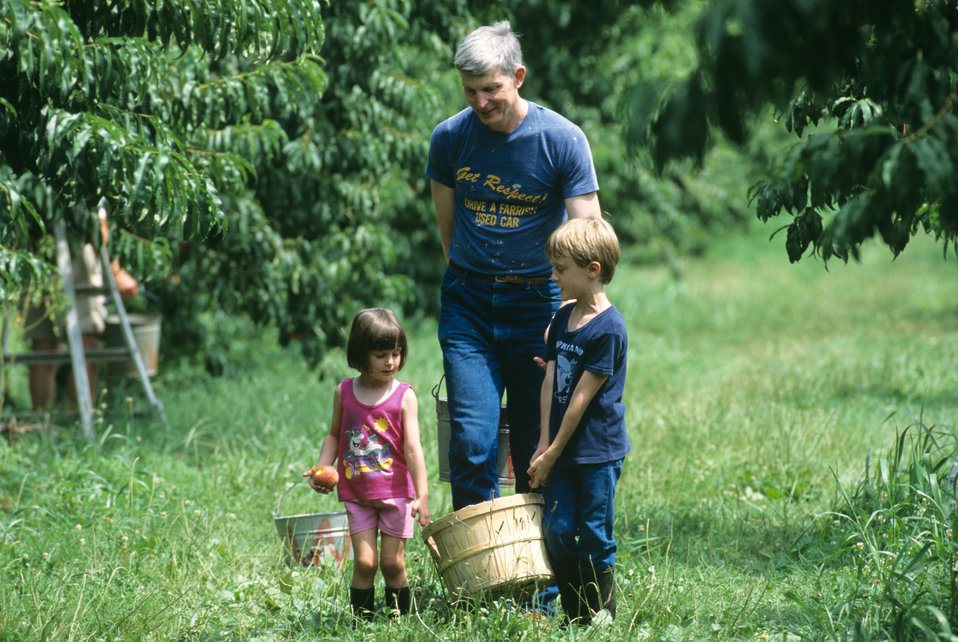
Children and their grandfather carry a basket of peaches picked from the William Manor Peach Orchard in Morrisville, VA in mid August 1995.